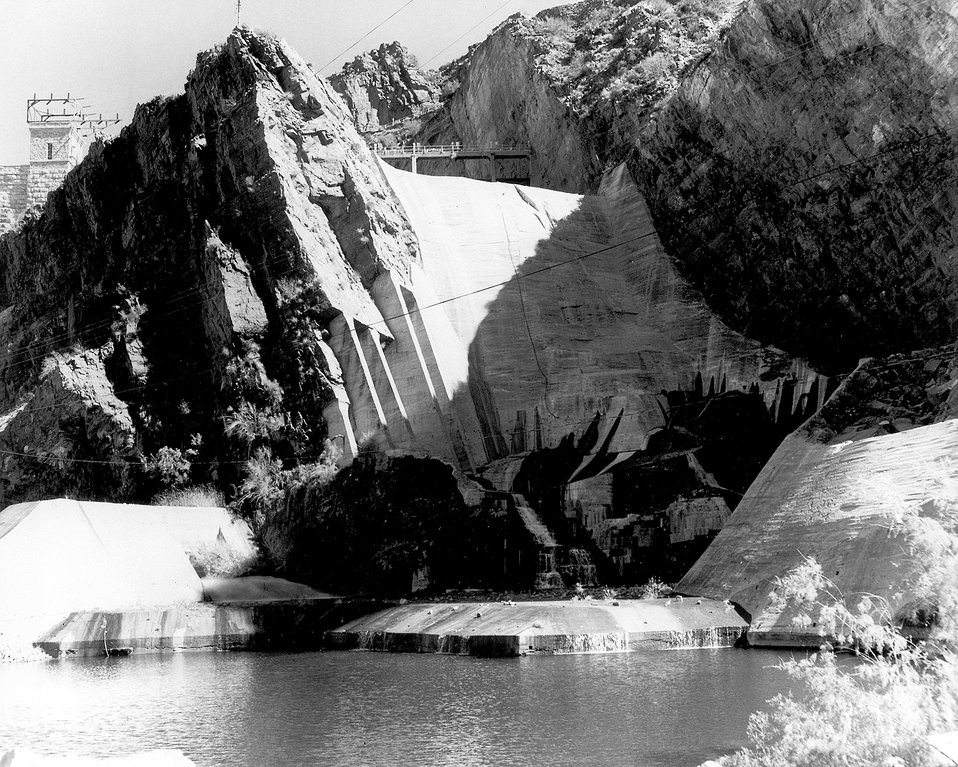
Theodore Roosevelt Dam is the biggest of its type in the world. c. 1977